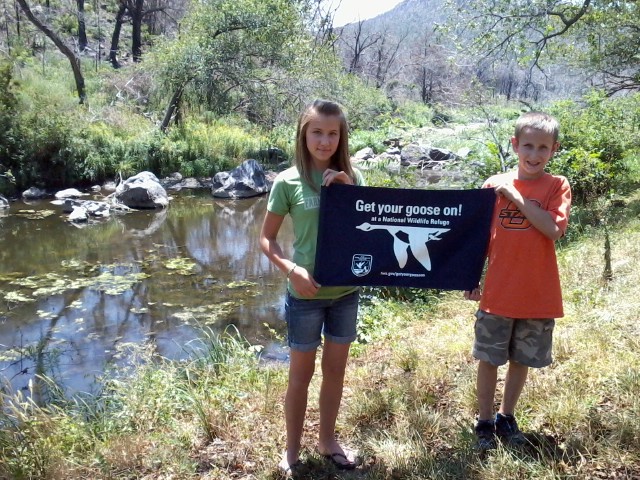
Get Your Goose On!

Wichita Mountains National Wildlife Refuge in Oklahoma.